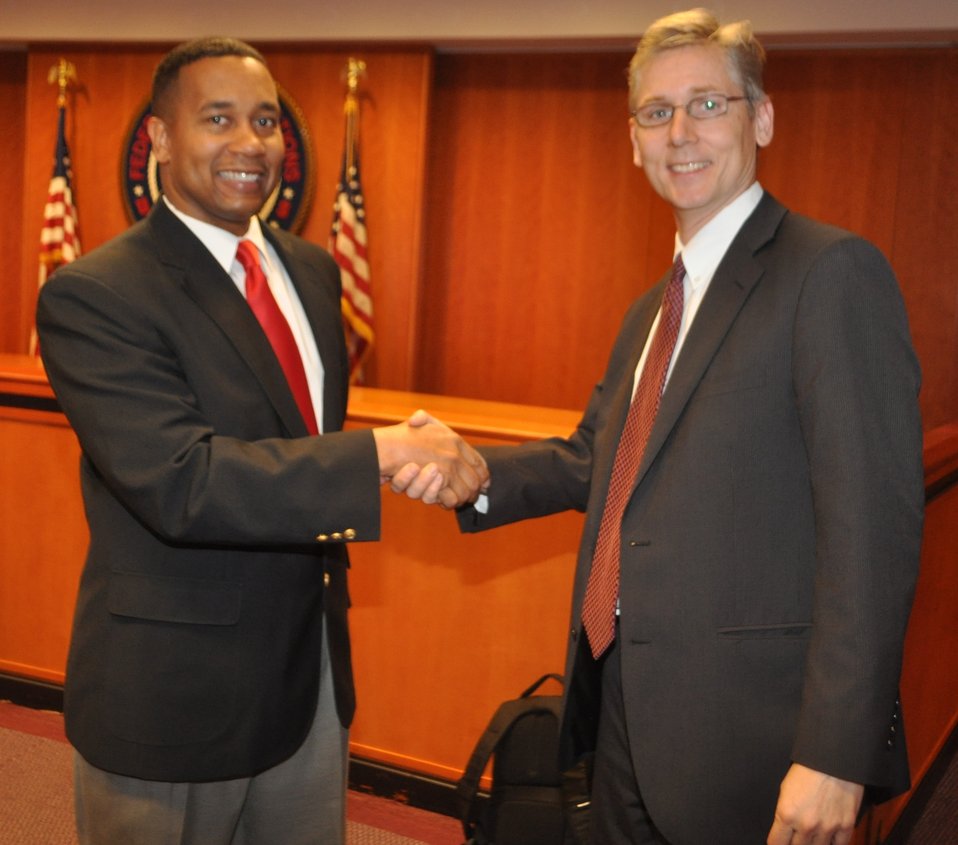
3.11.14 Accessibility and Innovation Initiative Speaker Series

Dr. Juan Gilbert and Gregory Hlibok, Chief of the Disability Rights Office in the Consumer & Governmental Affairs Bureau of the FCC.